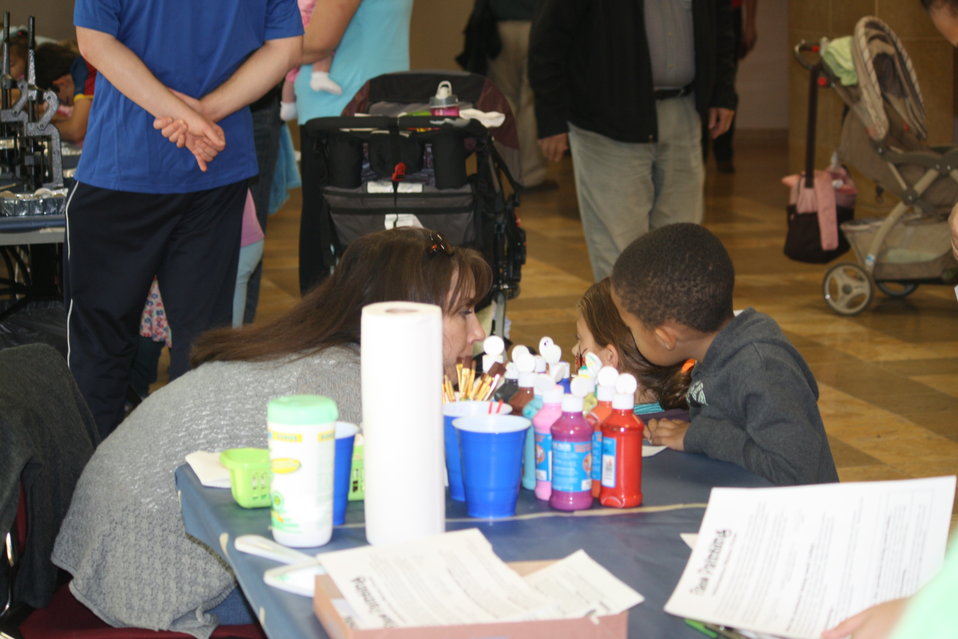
Patuxent Research Refuge 75th Anniversary

Face painting at the Wildlife Festival.